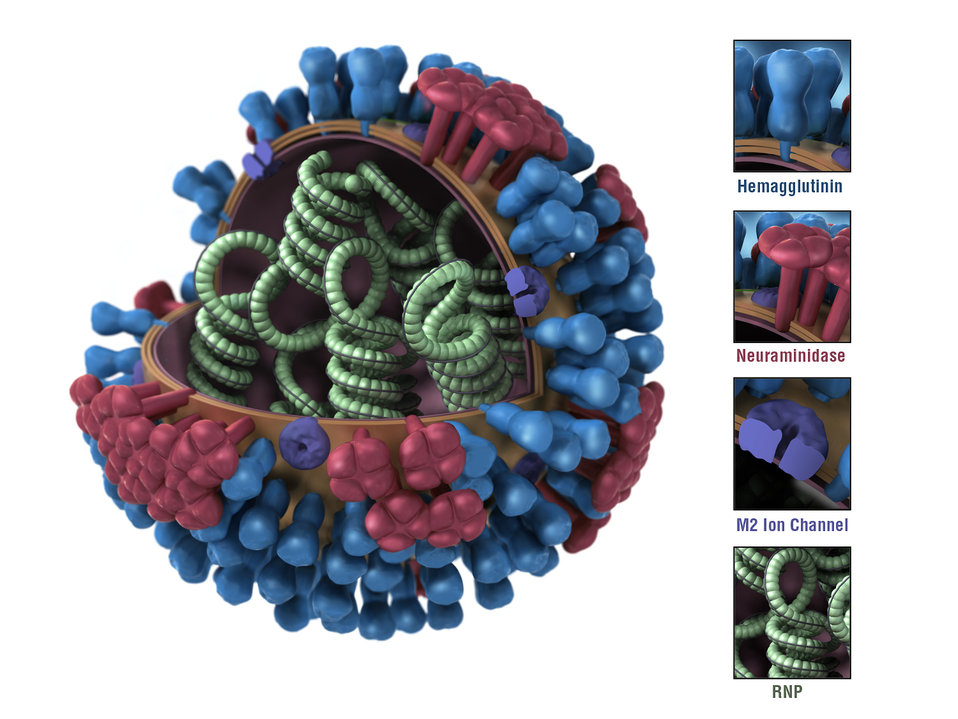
This illustration provides a 3D graphical representation of a generic influenza virion's ultrastructure, and is not specific to a seasonal, avian or 2009 H1N1 virus. Note the key to the right identifying the virion's surface protein constituents. See PHIL 11823 for an uncut view of the virion's exterior.